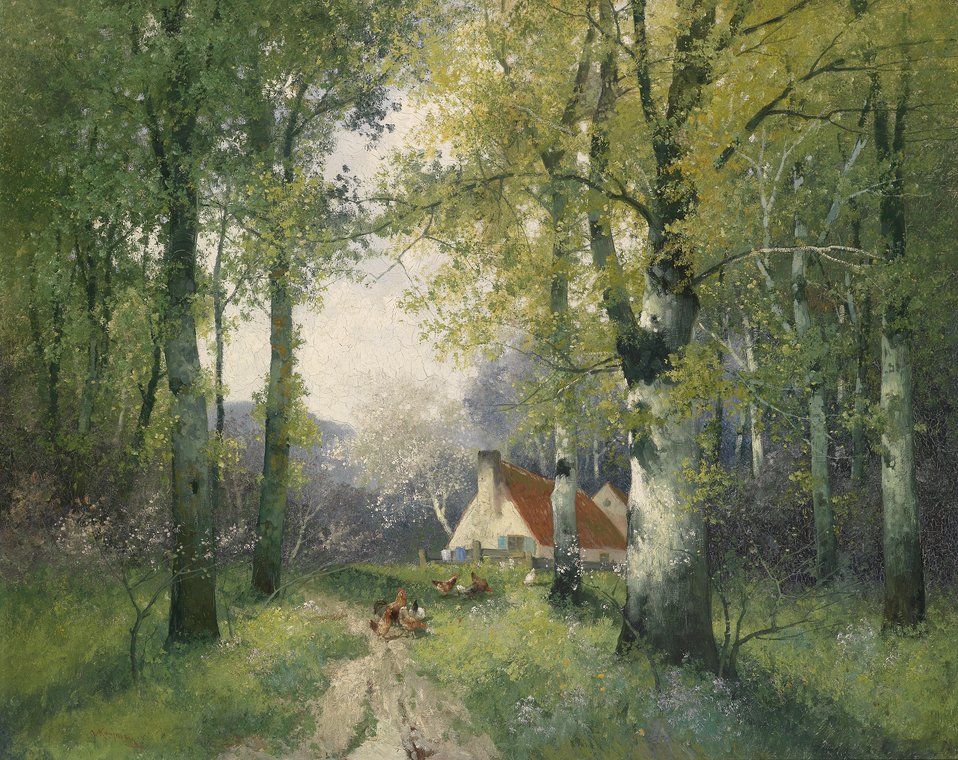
Adolf Kaufmann Frühling